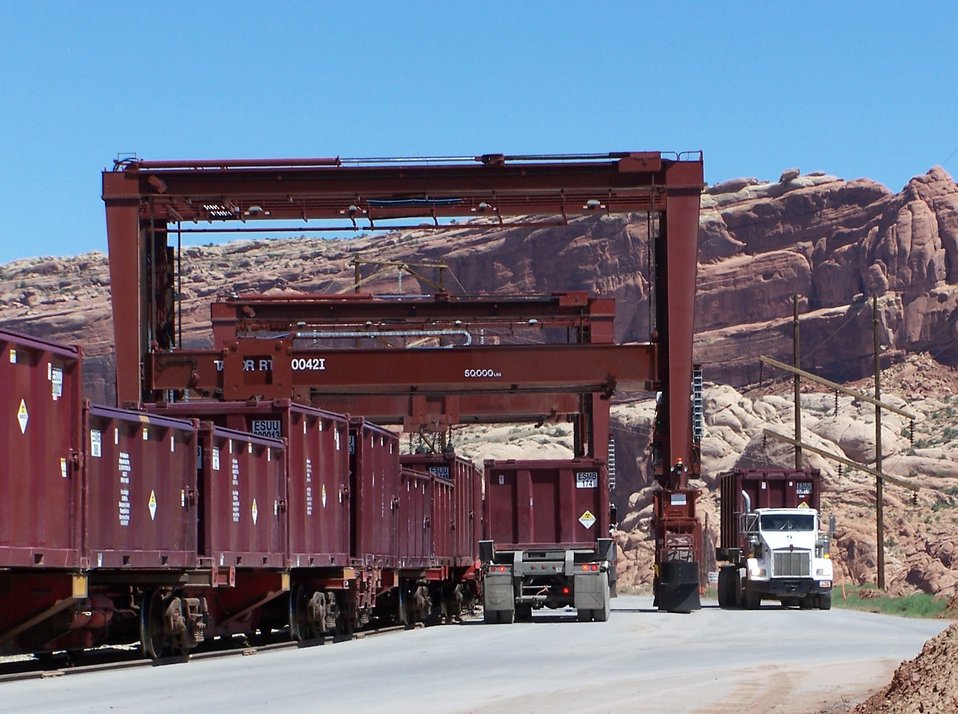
Gantry cranes at Moab

Two gantry cranes at the Moab site transfer containers to and from the train.